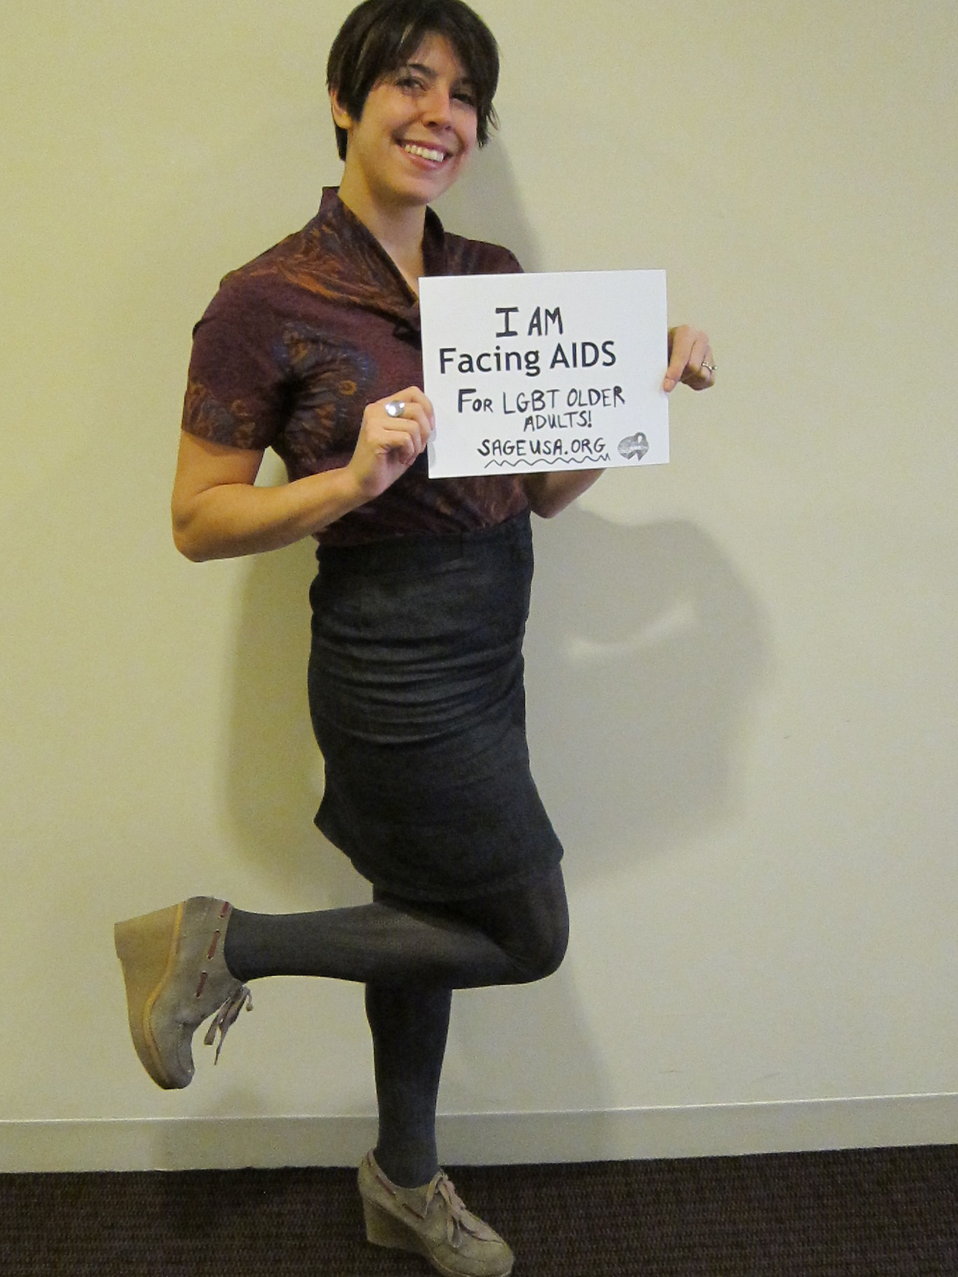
I am Facing AIDS for LGBT older adults.